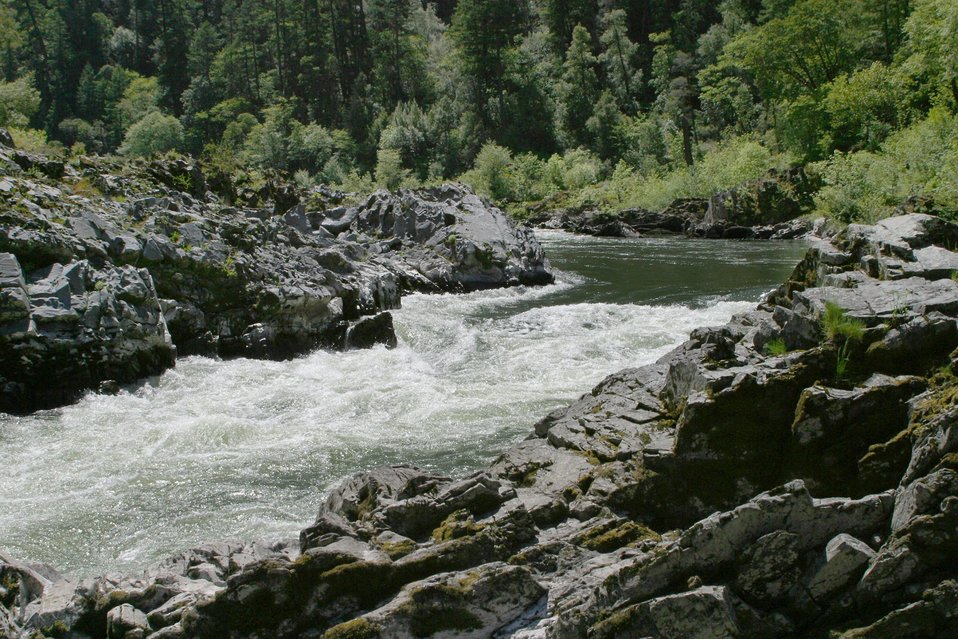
Wild section of the Rogue River from Grave Creek to Foster Bar May 19 to May 22.